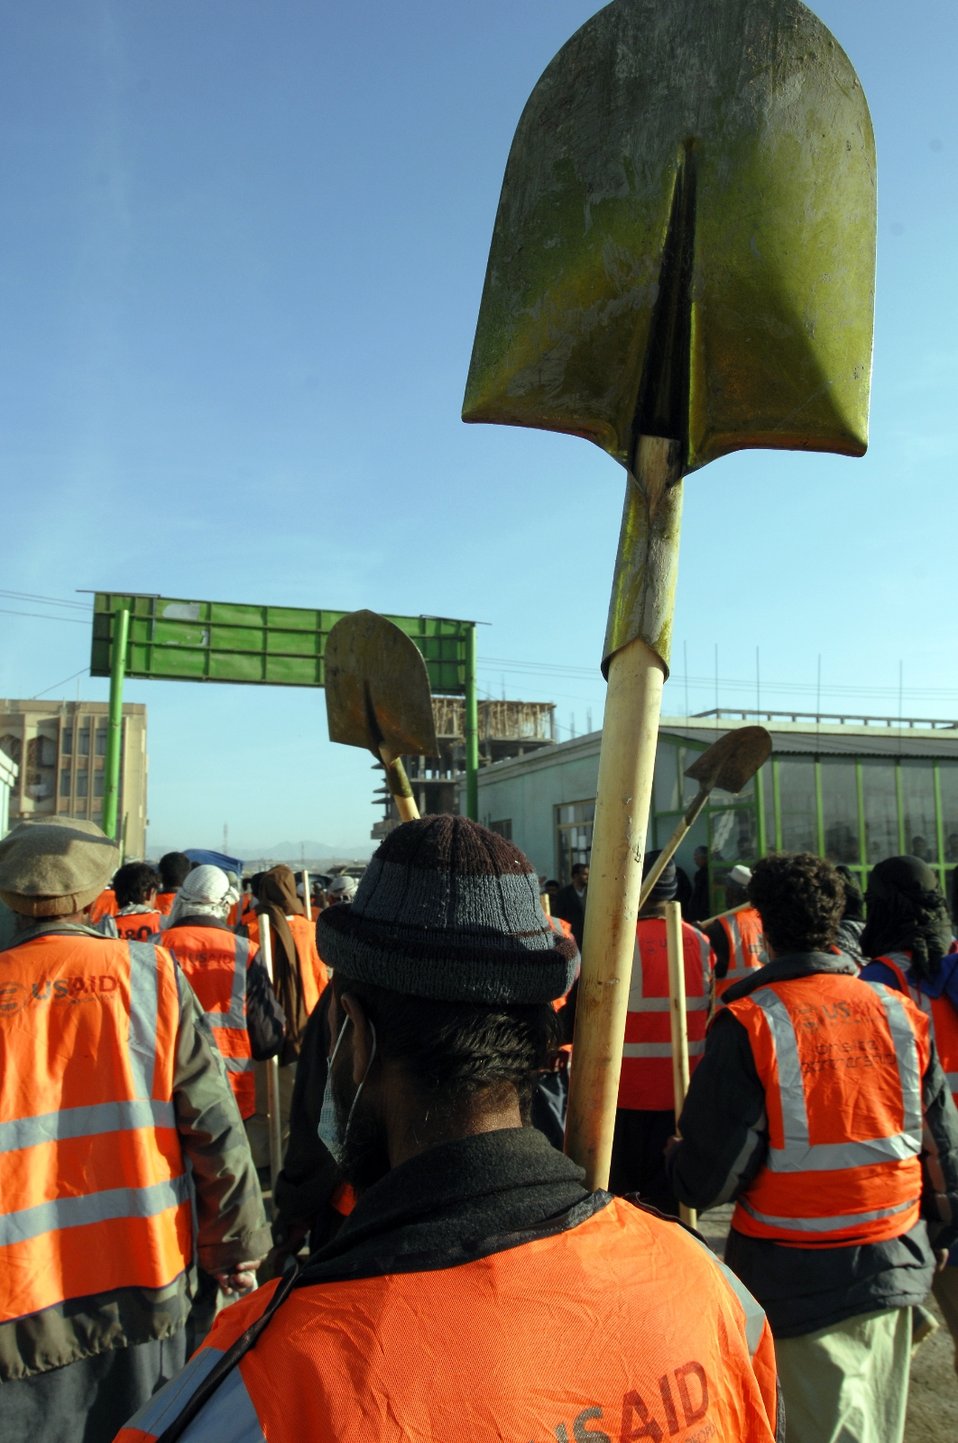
Care55